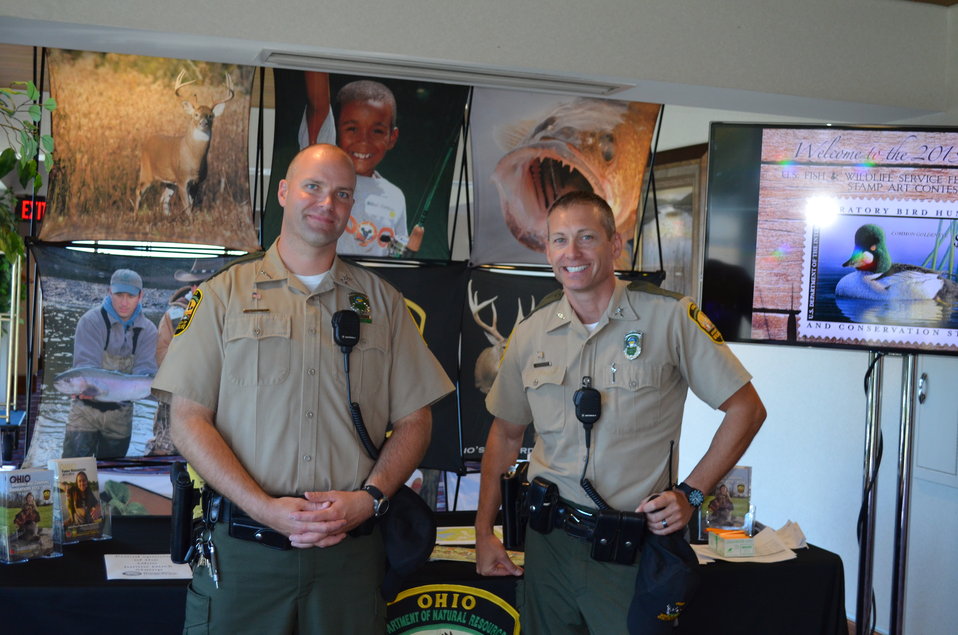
Ohio DNR Division of Wildlife law enforcement officials were on hand to talk with the public about wildlife conservation.